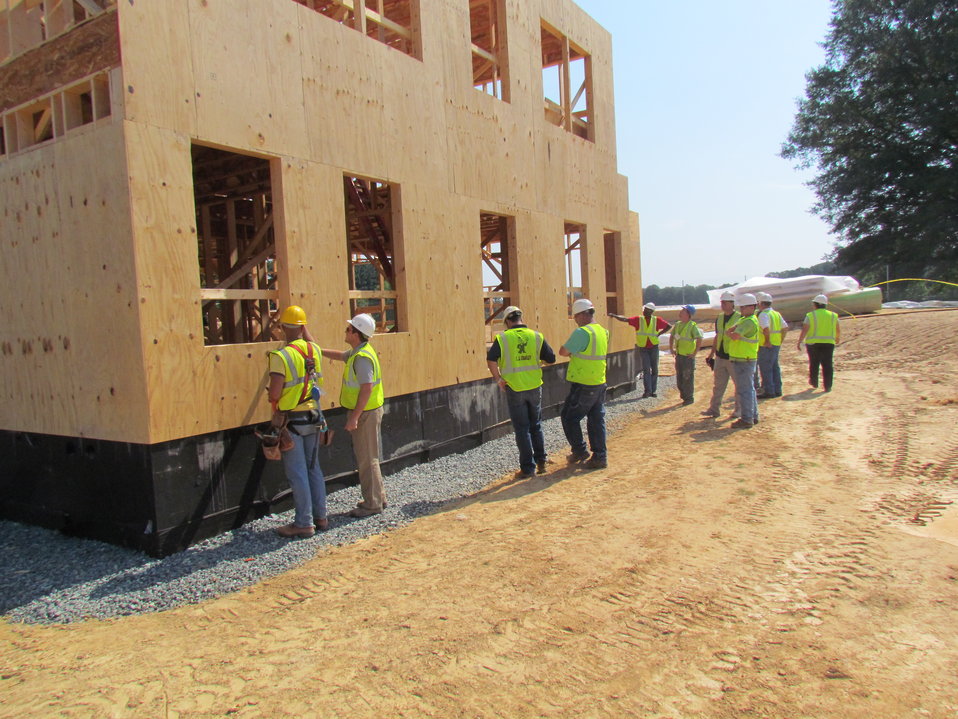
Net-Zero Energy Residential Test Facility - Workmen discussing proper installation of air/moisture barrier prior to installation.